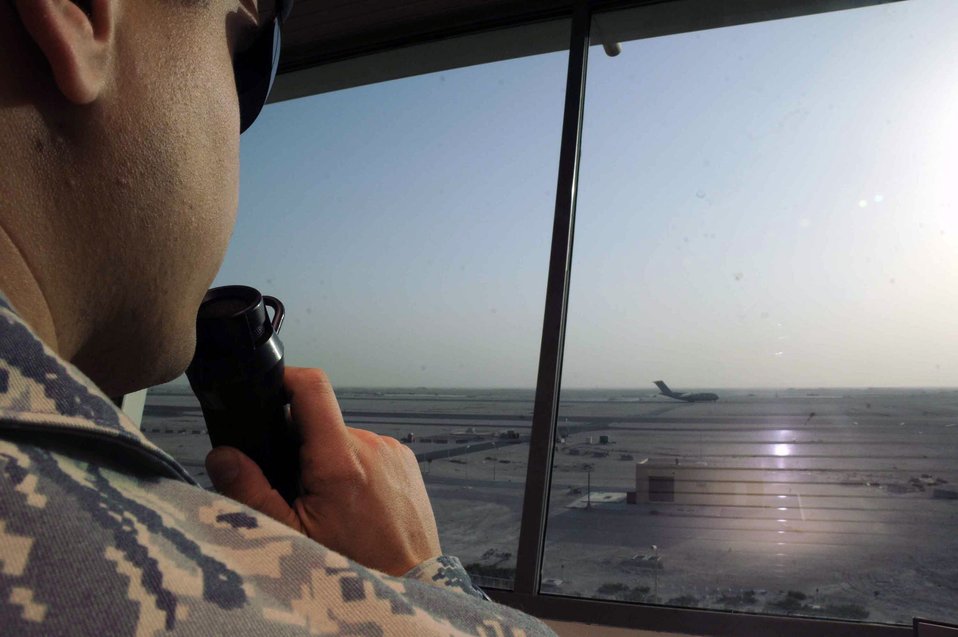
Air traffic controllers keep aircraft soaring

Senior Airman Eric Kindle communicates to aircraft taxiing on the runway through radio channels from the air traffic control tower April 15 at a Southwest Asian air base. Airman Kindle is a 379th Expeditionary Operations Support Squadron air traffic controller journeyman.